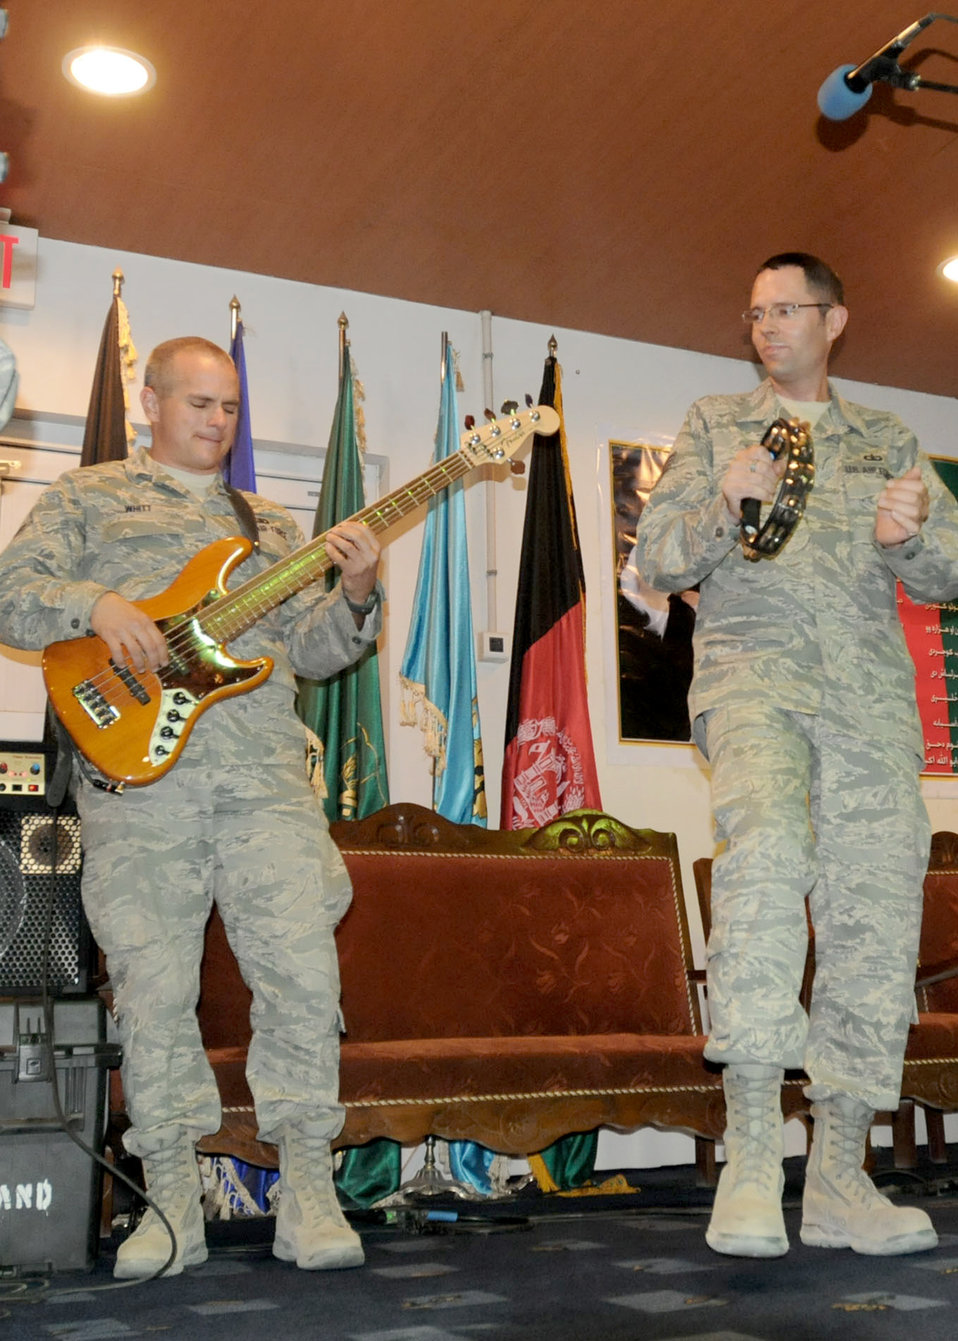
AFCENT/AAF band

Members of the U.S. Air Force Central Command band play to an Afghan and NATO Air Training-Afghanistan audience Oct. 16, 2010, in Kabul, Afghanistan. This morale event featured both the AFCENT band and the Afghan National Army band .